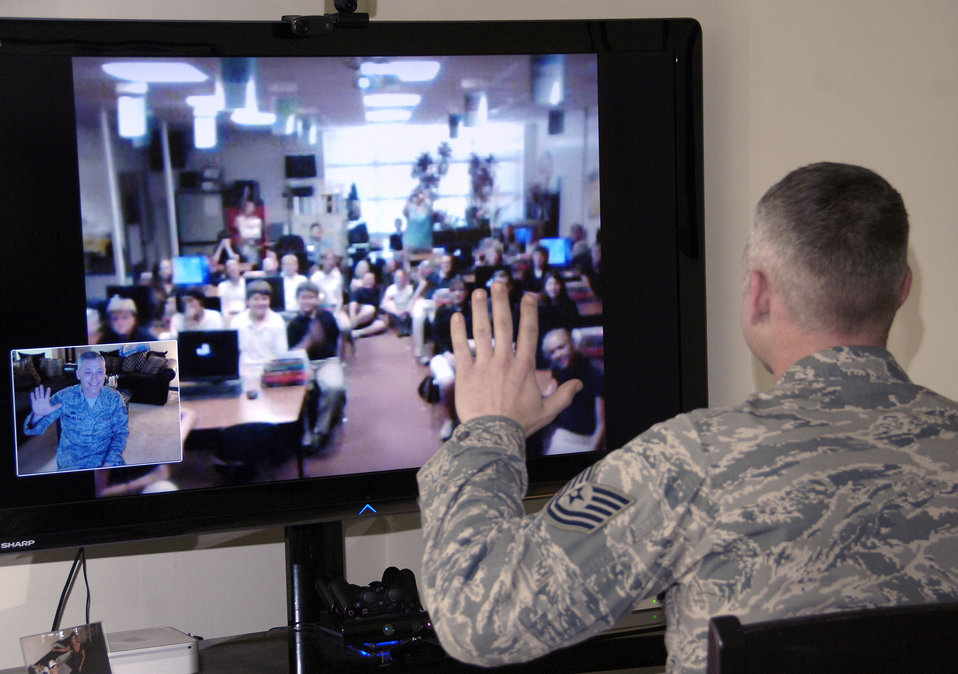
Yokota maintainer video chats with son's class about Operation Tomodachi

Tech. Sgt. Jason Myers waves to sixth graders at Elsanor Elementary School in Robertsdale, Ala., after a video teleconference March 25, 2011, to discuss Operation Tomodachi. Their teacher, Jeff Rhodus, had been discussing with his class the recent natural disasters in Japan. Sergeant Myers' son, Miland, is in the class and suggested they talk to his dad since he's stationed at Yokota Air Base, Japan. Sergeant Myers is a structural maintainer with the 374th Maintenance Squadron.